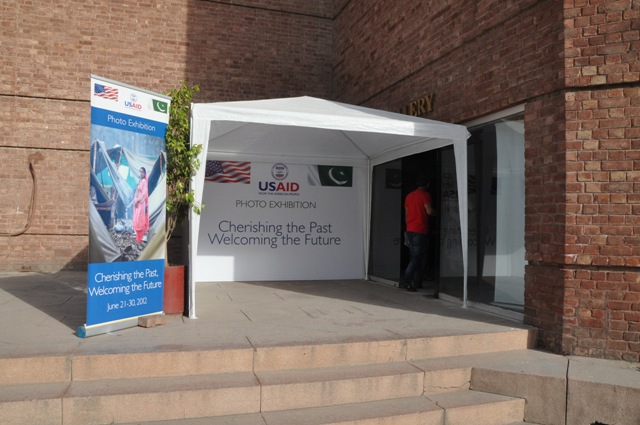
Inauguration point at Alhamra Art Gallery